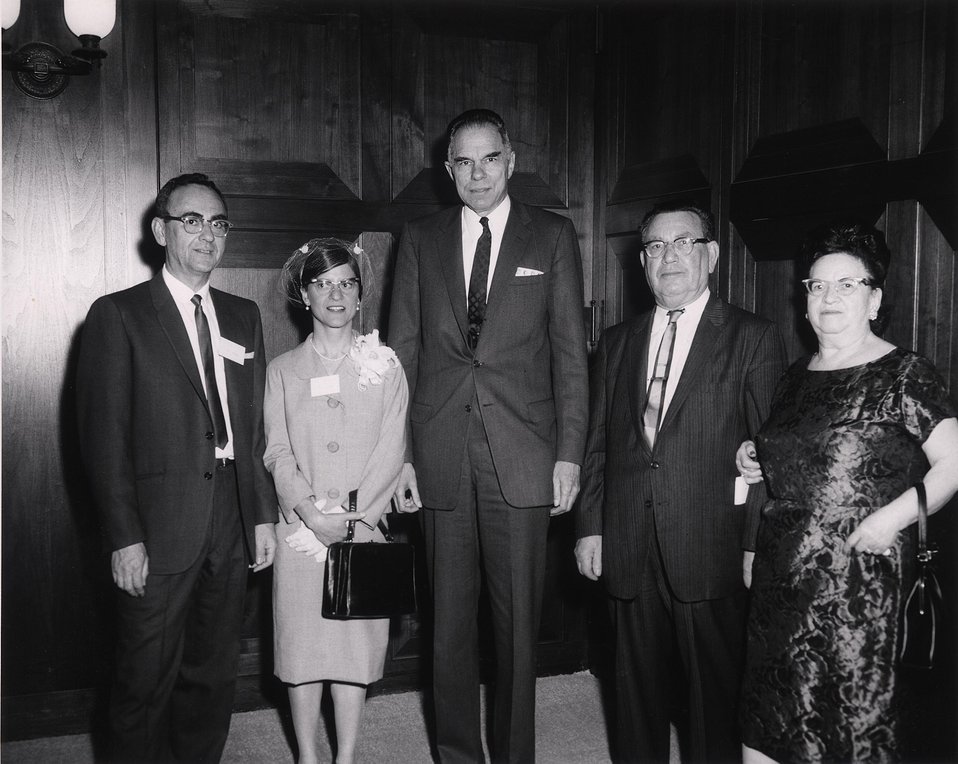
E. O . Lawrence Award Ceremony. National Academy of Sciences. April 29, 1965. Dr. and Mrs. Cowan, Dr. Seaborg, Mr. and Mrs. Louis A. Cohen.